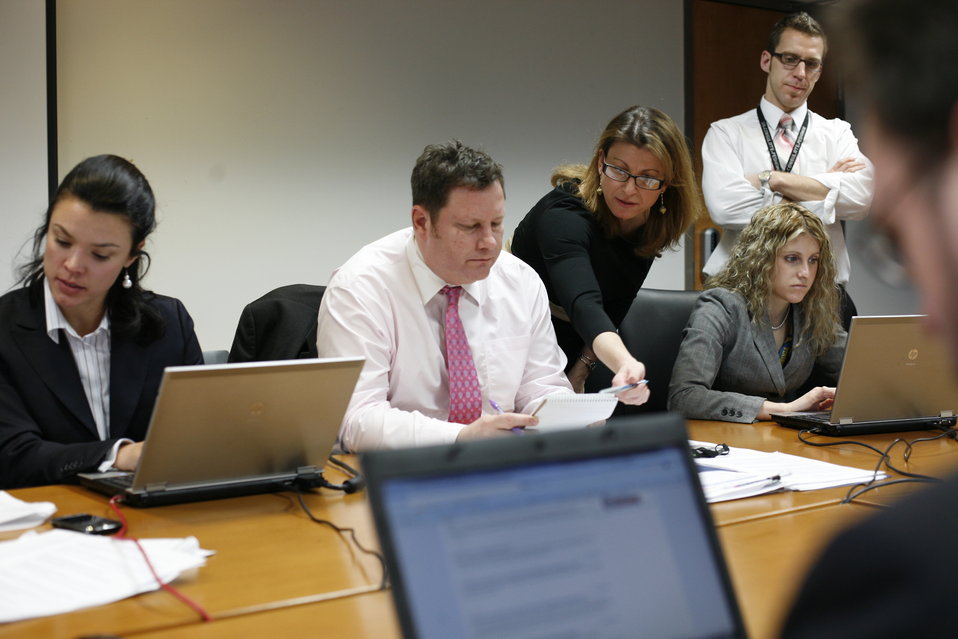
Acting Assistant Secretary Hammer Responds to #AskMike Questions

Acting Assistant Secretary of State for Public Affairs Mike Hammer, center; responds to #AskMike questions from the Department’s official Spanish Twitter feed, @USAenEspanol, on January 24, 2012. Also pictured: Director of the Office of International Media Engagement Abigail Dressel, left; Specialist Assistant Mireille Zieseniss, third from right; Public Affairs Specialist Sarah Goldfarb, second from right; and Acting Director of Digital Communications Center Ed Dunn, right.